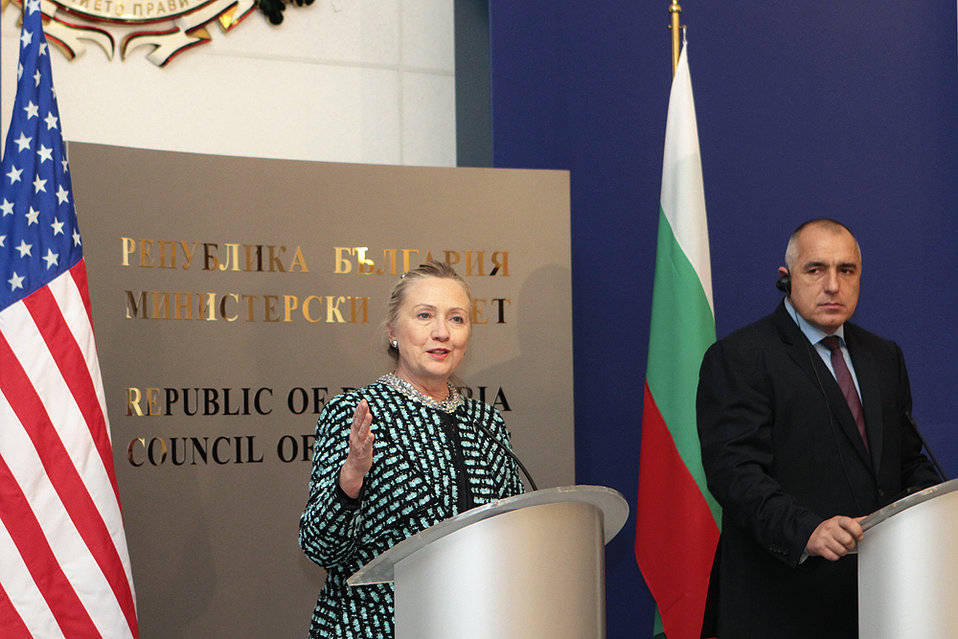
Secretary Clinton and Bulgarian Prime Minister Borissov Hold a Joint Press Conference

U.S. Secretary of State Hillary Rodham Clinton holds a joint press conference with Bulgarian Prime Minister Boyko Borissov at the Council of Ministers in Sofia, Bulgaria, on February 5, 2012.